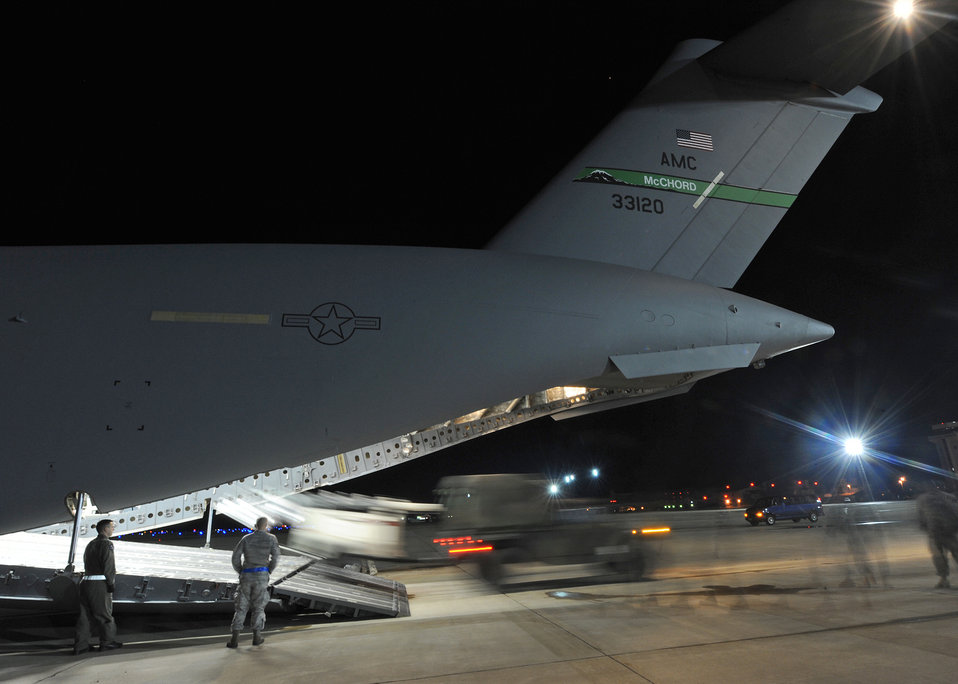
Cross-command communication fuels Haiti relief efforts

A military multipurpose vehicle backs a high-powered light fixture into the bay of a C-17 Globemaster III in support Operation Unified Response Jan. 22, 2010, at Langley Air Force Base, Va. Langley AFB Airmen and Army members from Fort Eustis, Va., loaded the aircraft.